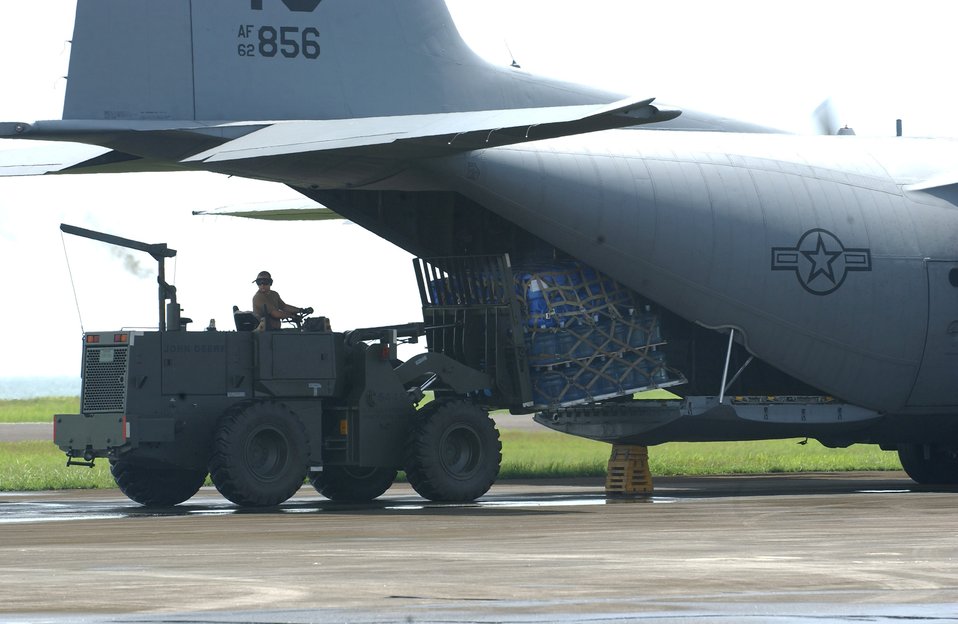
Philippine humanitarian relief

CLARK AIR BASE, Philippines (AFPN) – An Airman loads water onto a C-130 Hercules Feb. 20. Water and other relief supplies are being brought to Tacloban, a city on the northwestern part of the island of Leyte, where U.S. and Philippine armed forces are working together to help victims of the Feb. 17 landslide in the village of Guinsaugon.